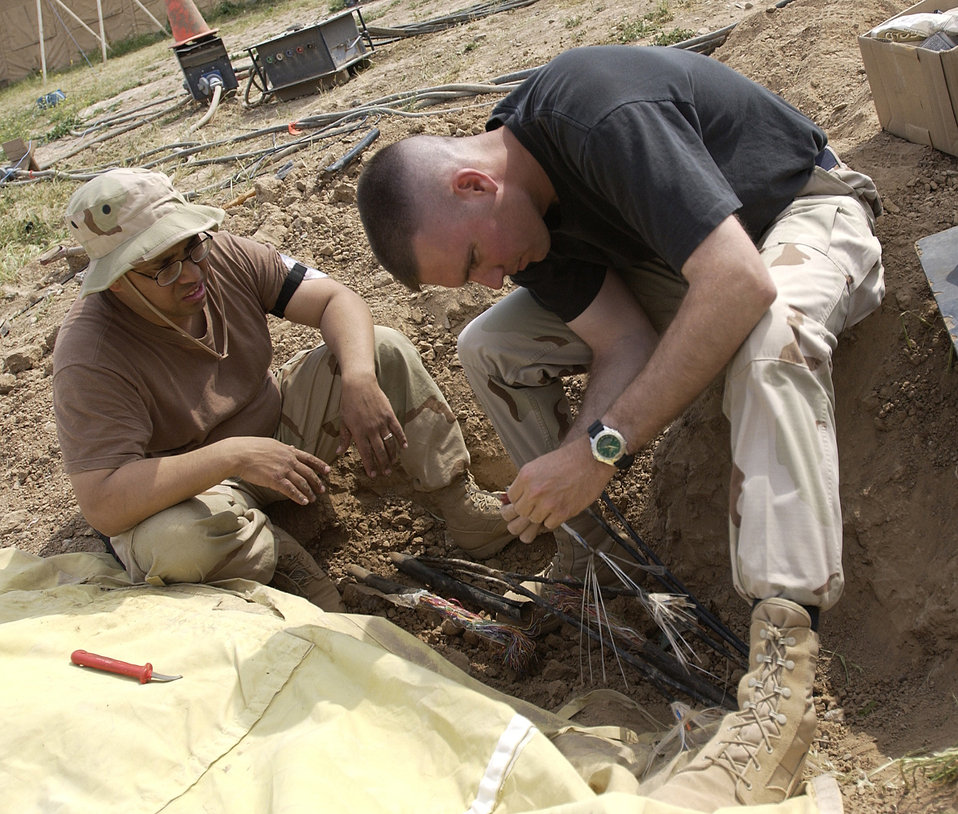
On the line

KIRKUK AIR BASE, Iraq -- 1st Lt. David Gallitan (right) and Staff Sgt. Donald Martinez, repair damaged fiber wire and telephone lines at the communications compound here April 12. Lieutenant Gallitan and Sergeant Martinez are members of the 506th Expeditionary Civil Engineer Squadron.